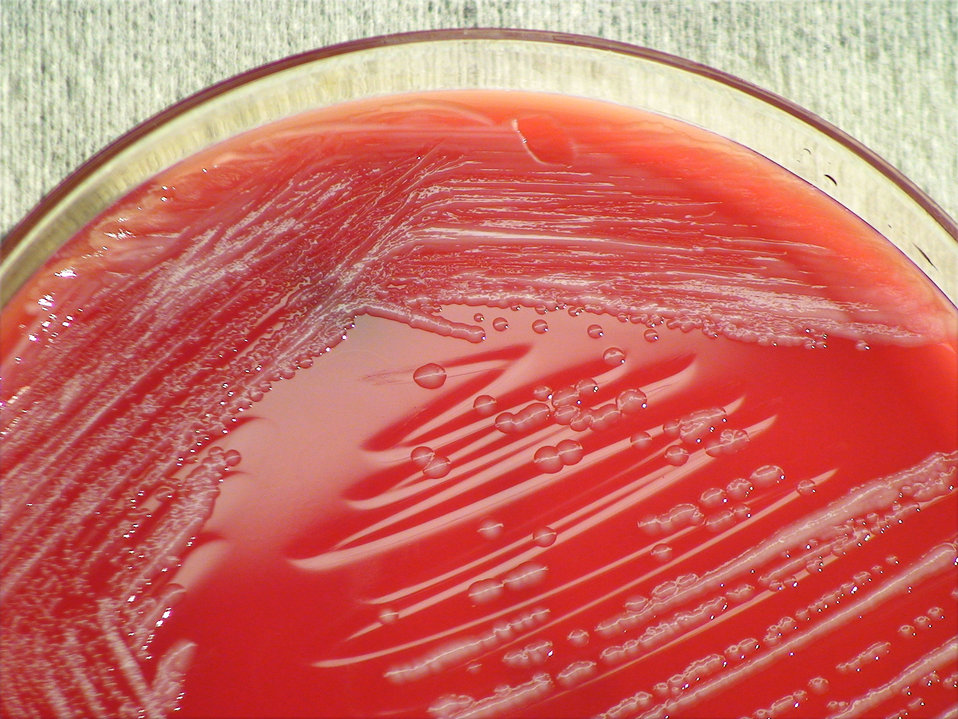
A closer view of PHIL 12395, this photograph depicts the colonial morphology displayed by Gram-negative, Bordetella bronchiseptica bacteria, which was grown on a medium of sheep's blood agar (SBA), for a 48 hour time period, at a temperature of 37�C. See PHIL 12394 for a view of these bacterial colonies after only 24 hours of growth.